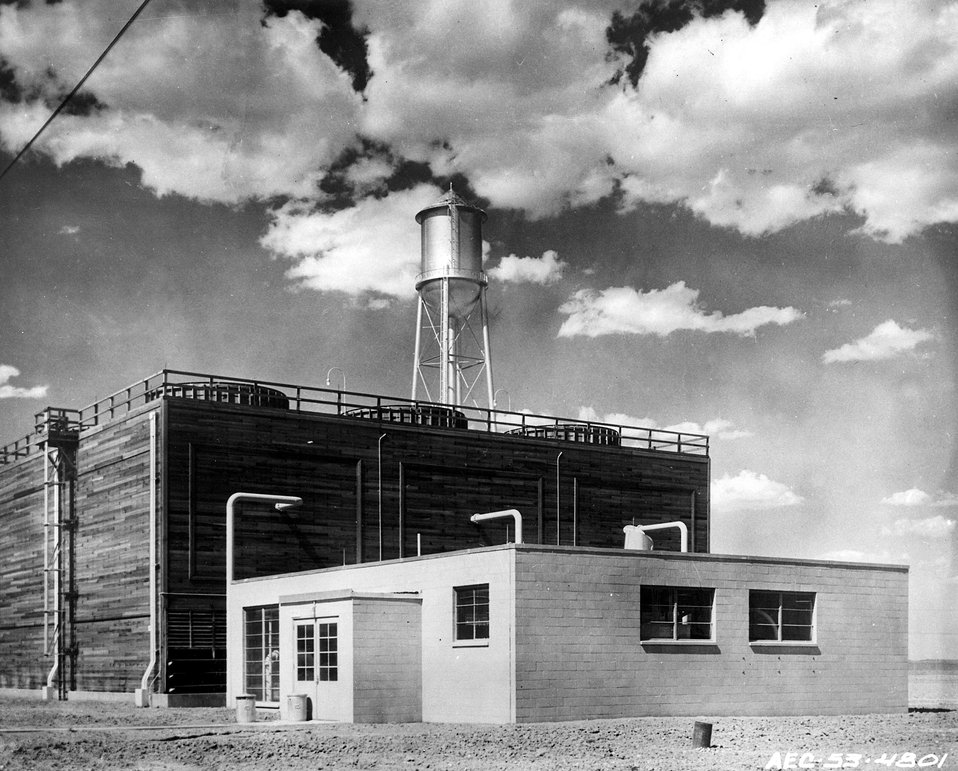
Idaho Falls, Idaho... Cooling Tower and Pump House at the Materials Testing Reactor at USAEC's National Reactor Testing Site, Idaho. Circa 1953.